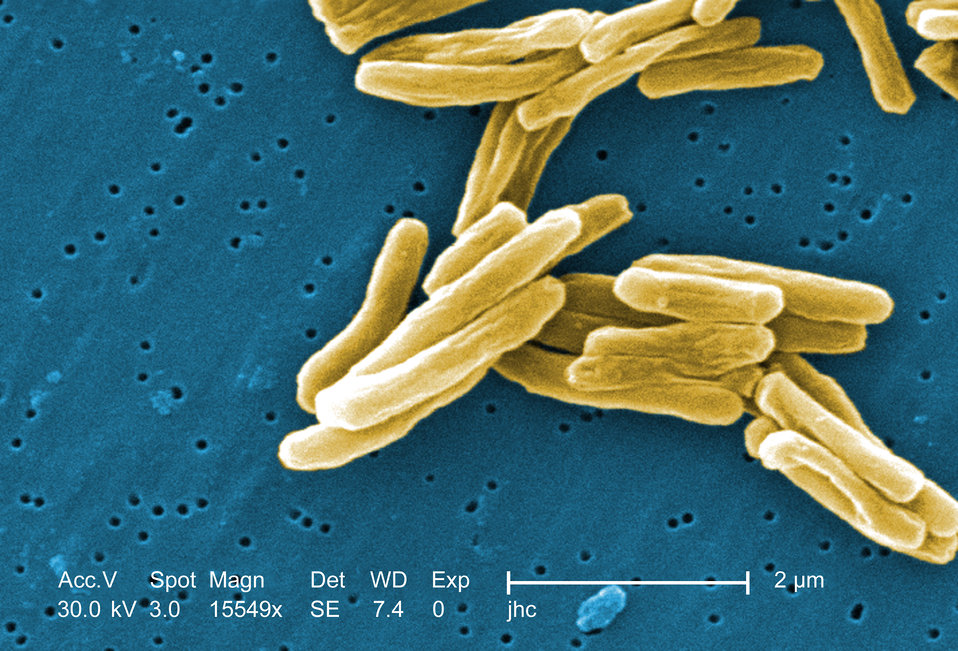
Under a high magnification of 15549x, this colorized scanning electron micrograph (SEM) depicted some of the ultrastructural details seen in the cell wall configuration of a number of Gram-positive Mycobacterium tuberculosis bacteria. As an obligate aerobic organism M. tuberculosis can only survive in an environment containing oxygen. This bacterium ranges in length between 2 - 4 microns, and a width between 0.2 - 0.5 microns. See PHIL 8438 for a black and white version of this image.